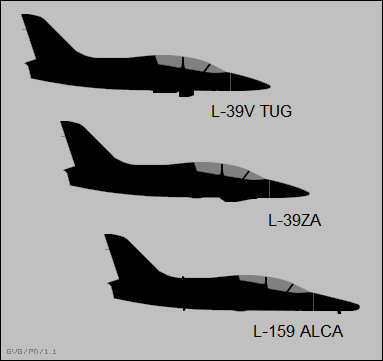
Side-view silhouettes of Aero L-39 and L-159 variants